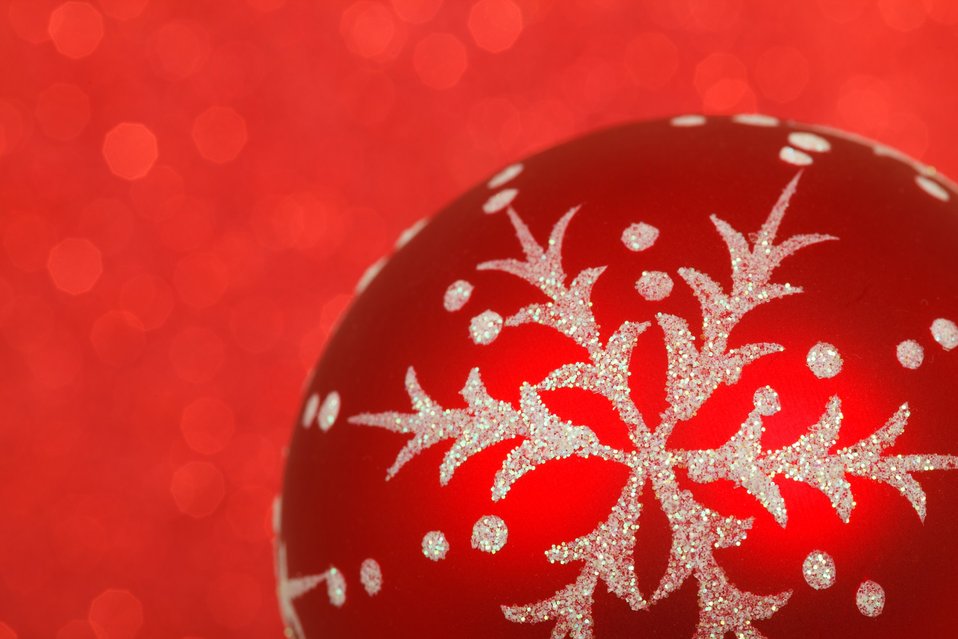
Red christmas ball ornament on a red background.